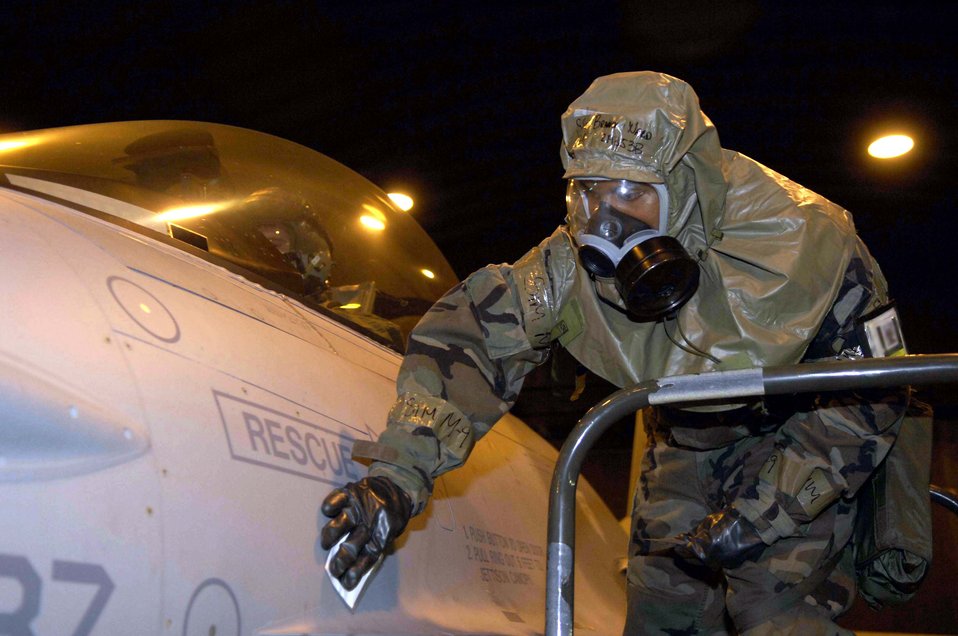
The search is on for bad chemicals

Staff Sgt Brandon Ward uses specially treated paper March 6 to detect chemical agents on an F-16 Fighting Falcon during a NATO Tactical Evaluation at Aviano Air Base, Italy. The evaluation is to determine if Aviano's 31st Fighter Wing is prepared to support NATO Response Force 9/10.